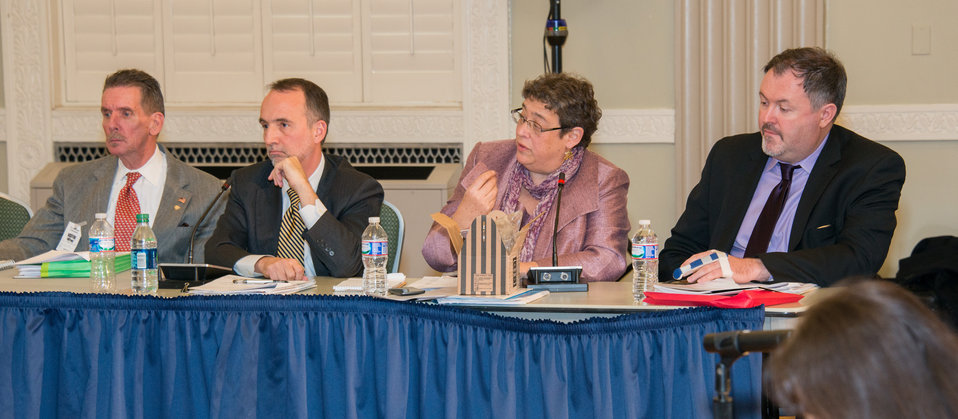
Public Meeting of Advisory Council on Wildlife Trafficking

Members of the Advisory Council on Wildlife Trafficking

John T. Webb; Marcus A. Asner, Partner, Arnold & Porter LLP; Susan R. Lieberman; Crawford J. Allan, Senior Director, TRAFFIC, Washington, D.C.